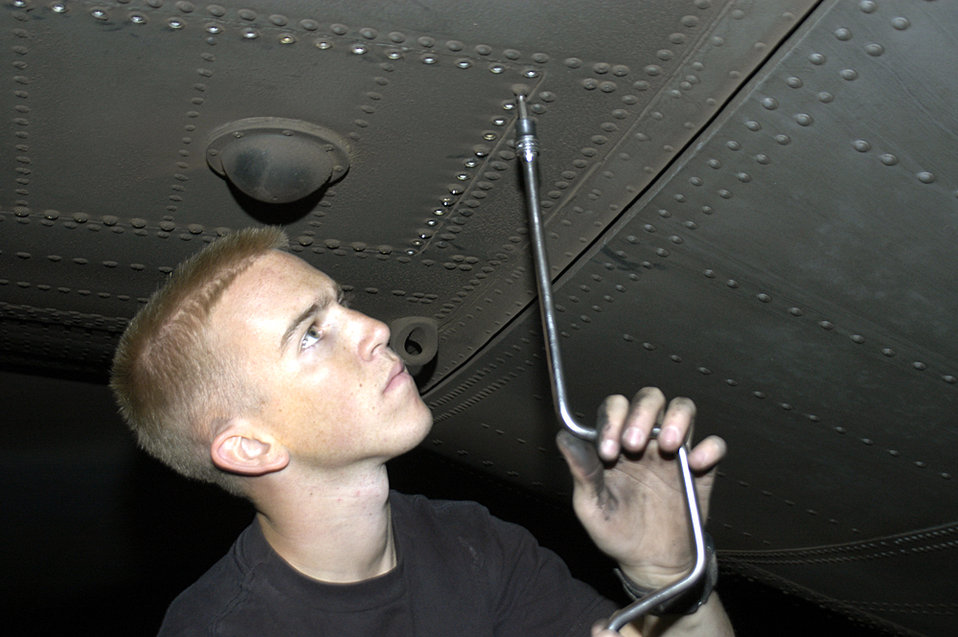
Stranded Herc

MOSUL, Iraq (AFPN) -- Senior Airman Brian Kundick removes the bolts from an access panel to reach the mounting bolts of a failed elevator booster pack on a C-130 Hercules stranded here. The pack lets the rear wings move vertically, allowing the aircraft to ascend or descend in flight. He and Hydraulics specialist Staff Sgt. David Harrelson came here Nov. 12 to help get the cargo plane back in the air. The maintainers are deployed to Iraq with the 43rd Aircraft Maintenance Squadron from Pope AFB, N.C.